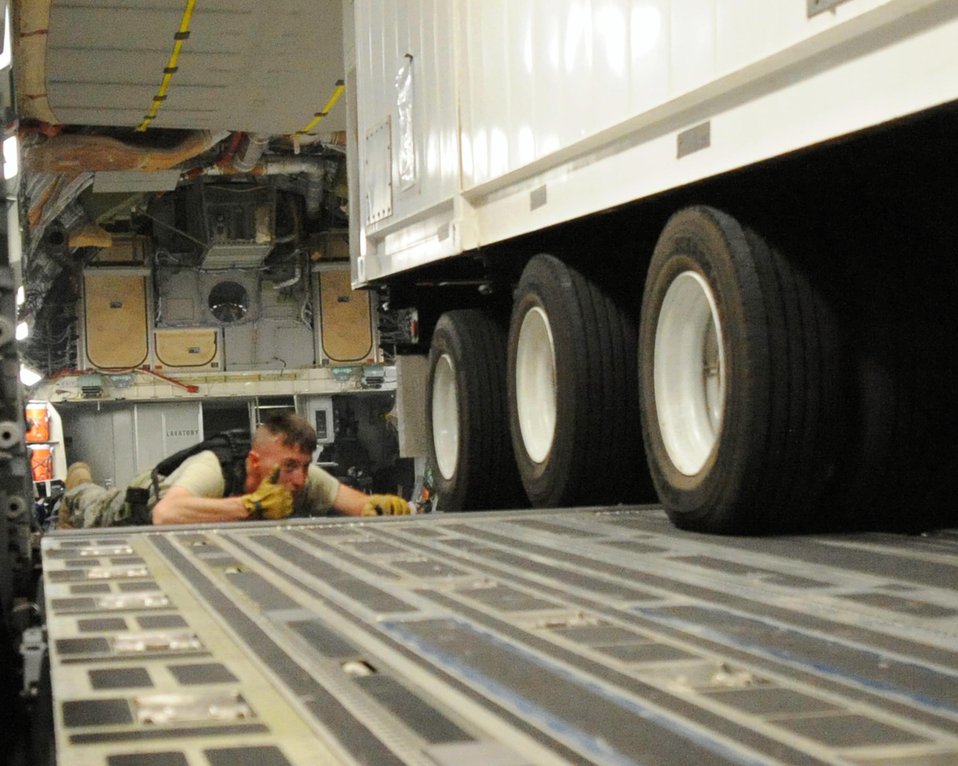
No cargo too large for Sather aerial port Airmen

Staff Sgt. Regis Dumm helps guide a new communication trailer out of a C-17 Globemaster III cargo aircraft. The 66-foot, 80,000 pound trailer is one of two recently delivered to Sather Air Base, Iraq, that are designed to provide phone service to the entire Victory Base Complex in Baghdad. Airmen from the 447th Air Expeditionary Group and Soldiers from the 553rd Combat Sustainment Support Battalion joined forces to deliver the massive trailers safely.